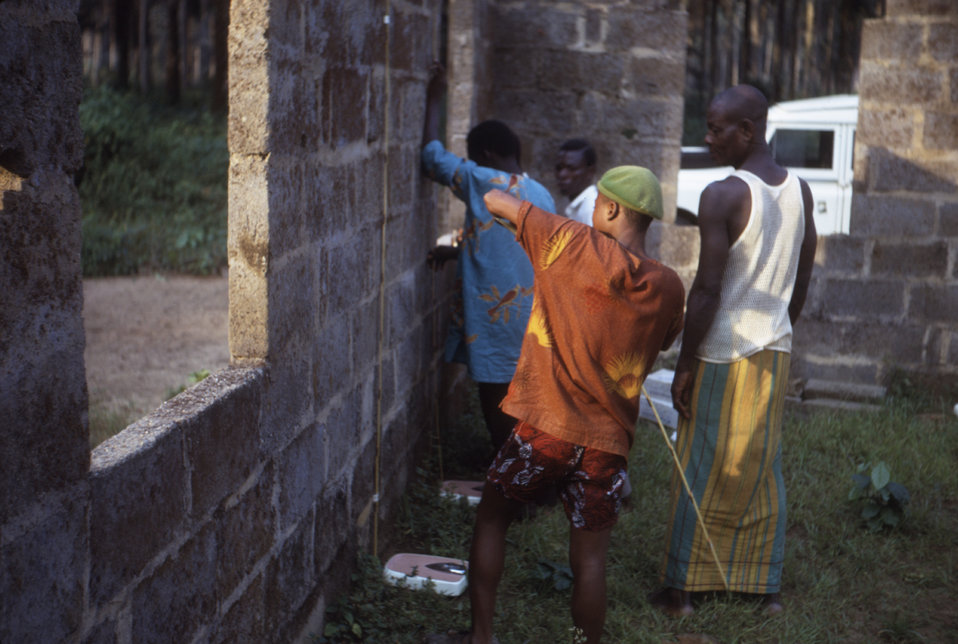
This 1968 photograph taken during the Nigerian-Biafran civil war, showed individuals assessing the height and weight measurements of Biafran refugees, in order to quantitatively determine the amount of food supplementation per refugee was to be distributed based on each person's level of malnutrition.